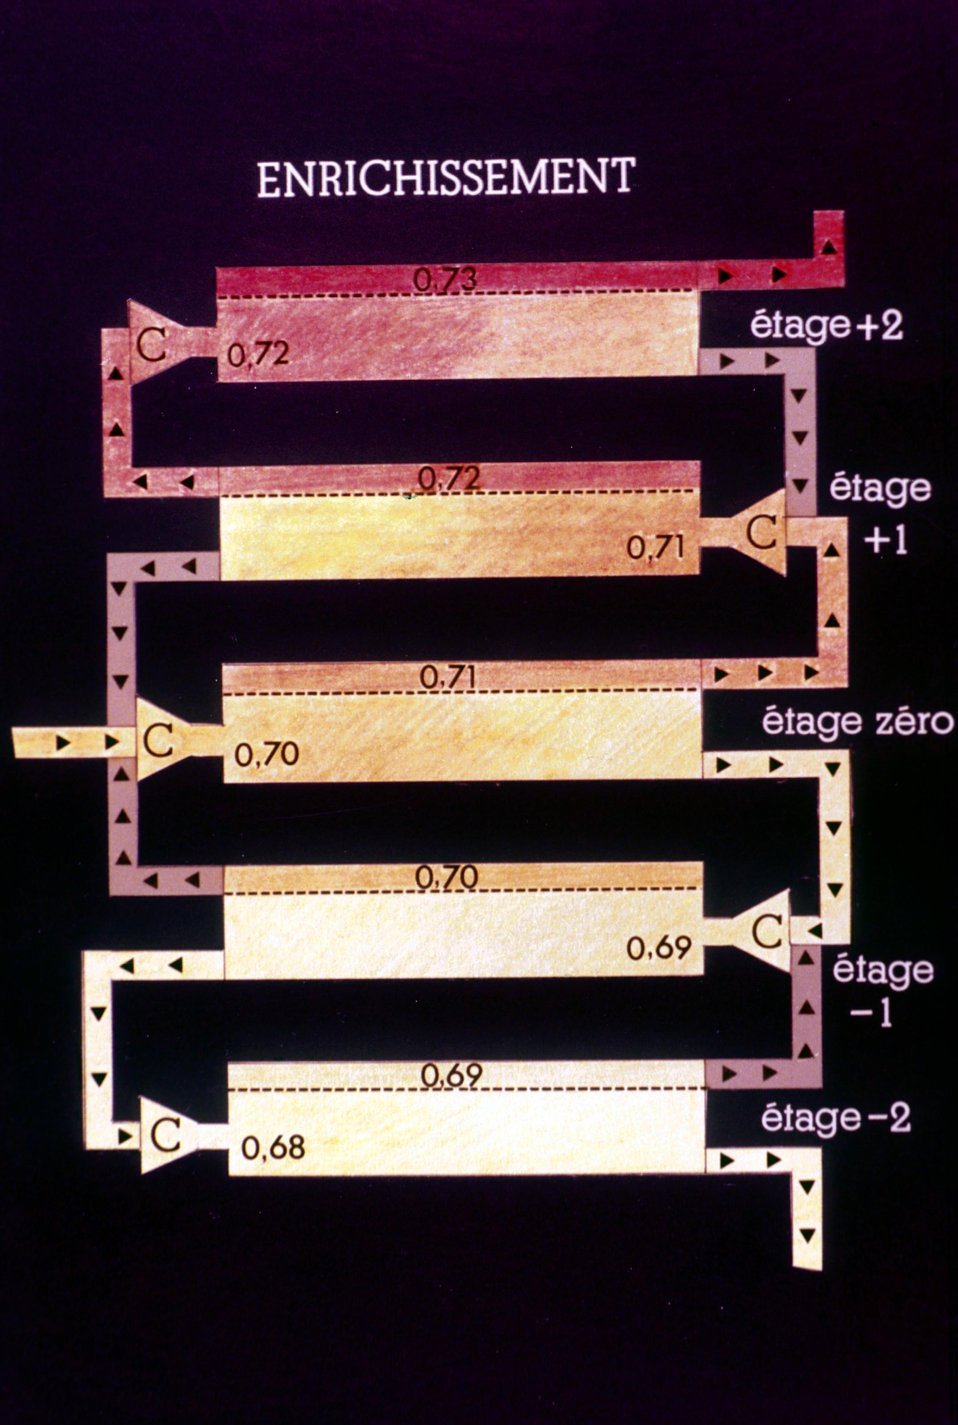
Le systÌm d'enrichissement de l'uranium.